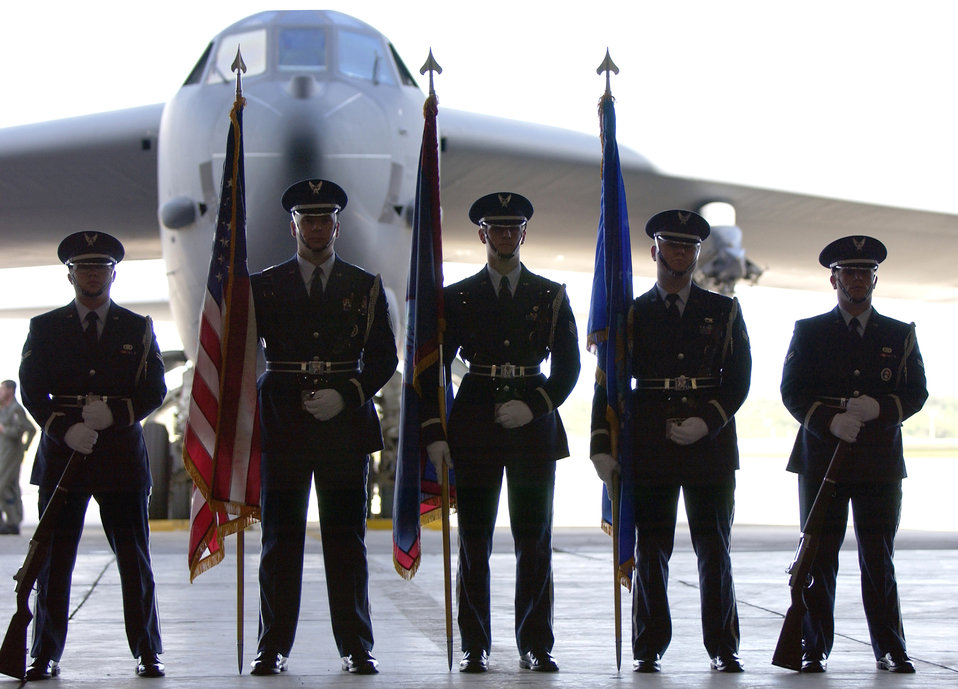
Standing guard

ANDERSEN AIR FORCE BASE, Guam -- Base honor guard Airmen stand in front of a B-52 Stratofortress during a ceremony here Jan. 25. At Air Force installations worldwide, honor guard Airmen perform at changes of command, military funerals, and retreat and retirement ceremonies.